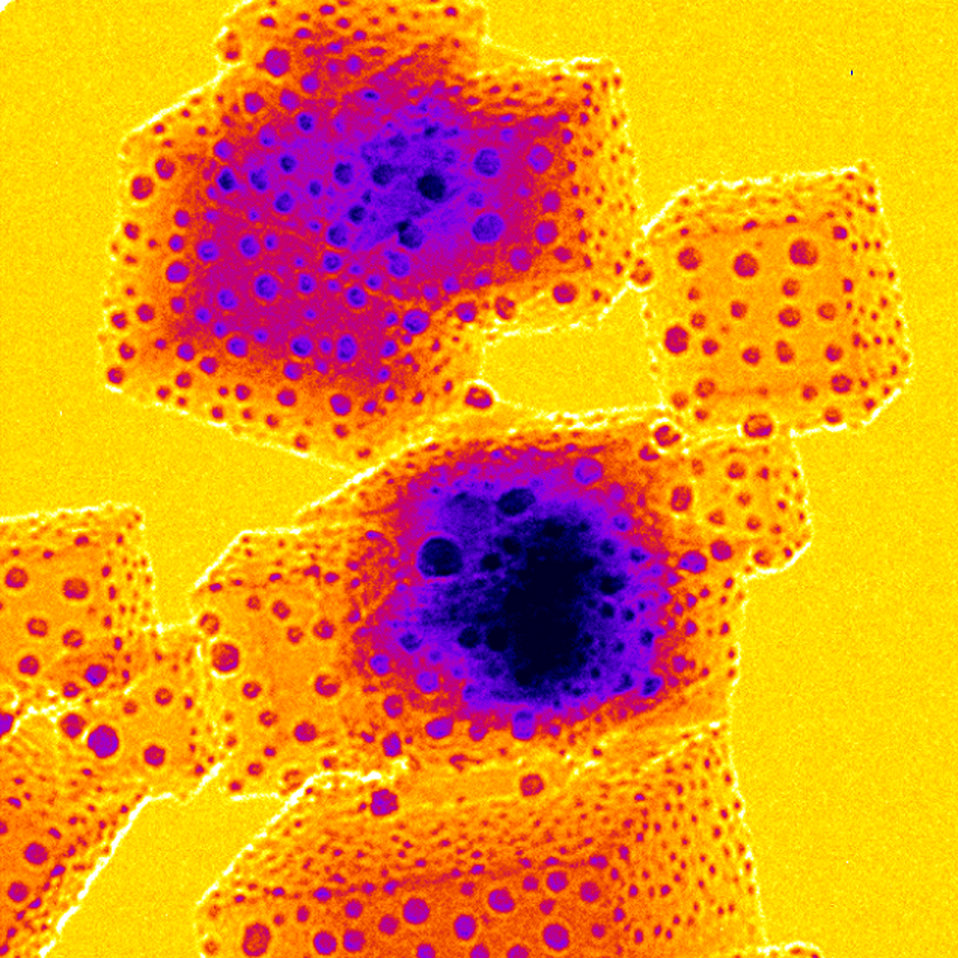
Chemical Analysis; Magnesium Oxide Dice

NIST scientists are developing new three-dimensional chemical imaging methods. Using a scanning transmission electron microscope, a tilting stage, and sensitive detectors, NIST researchers can construct images that reveal both the chemical components and the complex shapes of crystal structures. This image shows cubes of magnesium oxide. Nanoscale particles of gold were deposited on the crystal faces to help define the surface topography